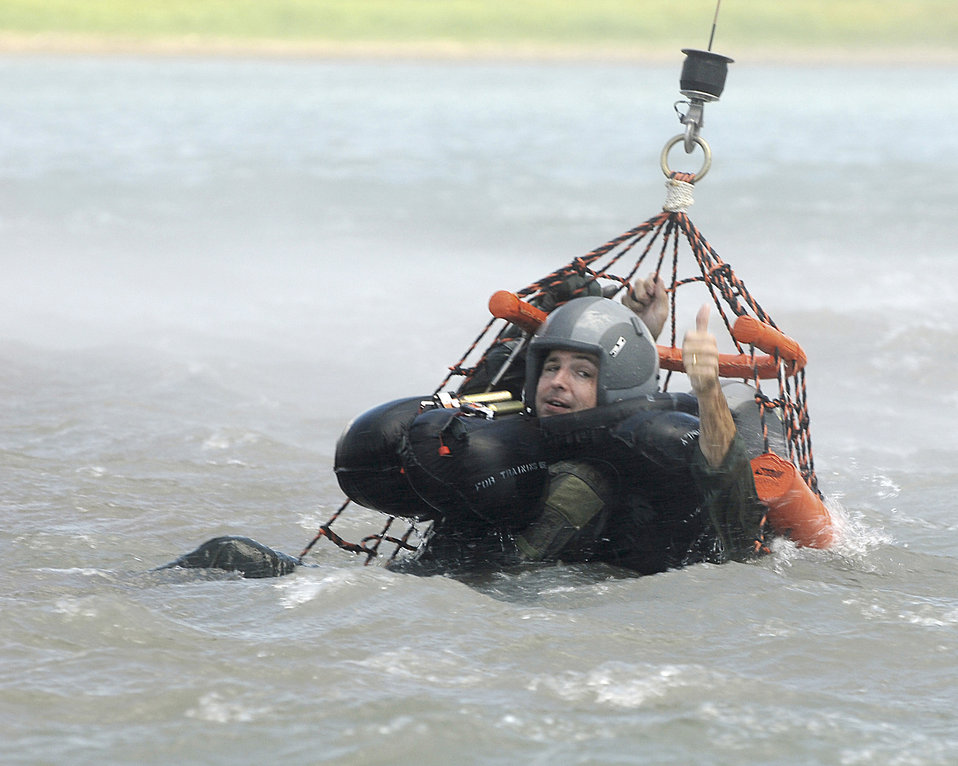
Air Guard flight crews undergo water survival training

Maj. Michael Meylor, an F-16 Fighting Falcon pilot, gives thumbs up for extraction to the crew of an Army UH-60 Black Hawk helicopter during a water survival training exercise July 11 at Canyon Lake, Texas. He is assigned to the Texas Air National Guard's 149th Fighter Wing at Lackland Air Force Base, Texas, and the refresher training is an annual requirement for aircrew members.